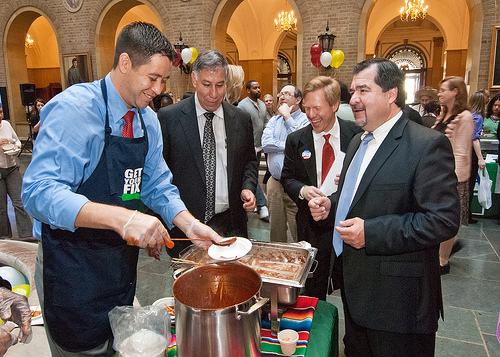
Russell Avalos, Ed Avalos, Undersecretary, Marketing and Regulatory, Max Finberg, Director, Center for Faith Based and Neighborhood Partnerships and Al Almonza, Administrator, Food Safety Inspection Service share a laugh at the U. S. Department of Agriculture Second Annual Hispanic Heritage Food Fiesta to celebrate Hispanic Heritage Month at USDA in Washington, DC, Thursday, October 6, 2011.